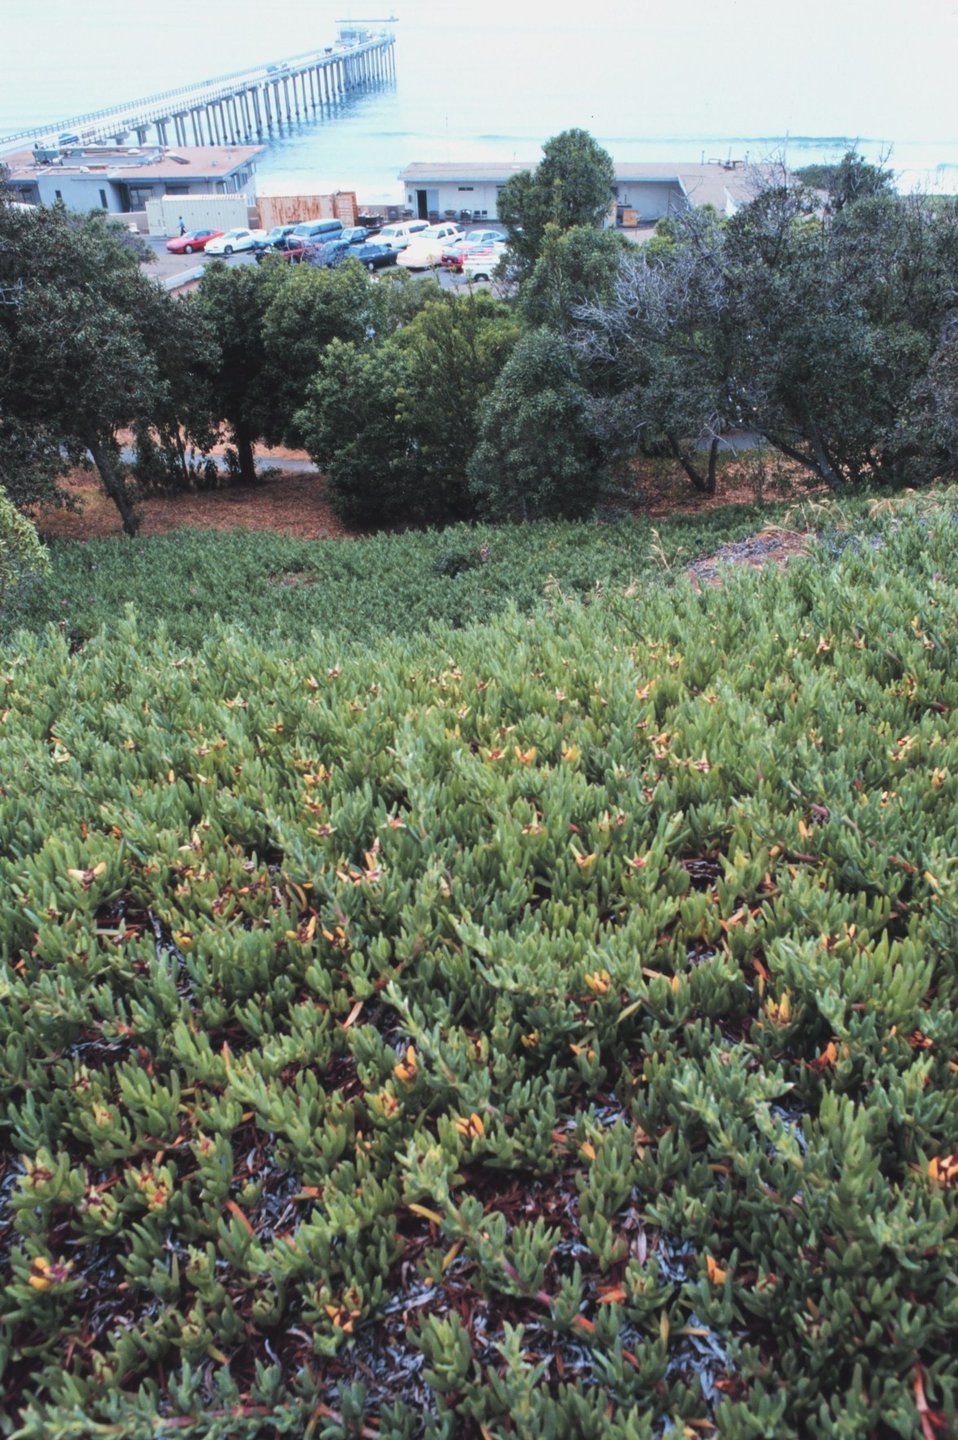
Looking down from the hill towards the Scripps Research Pier